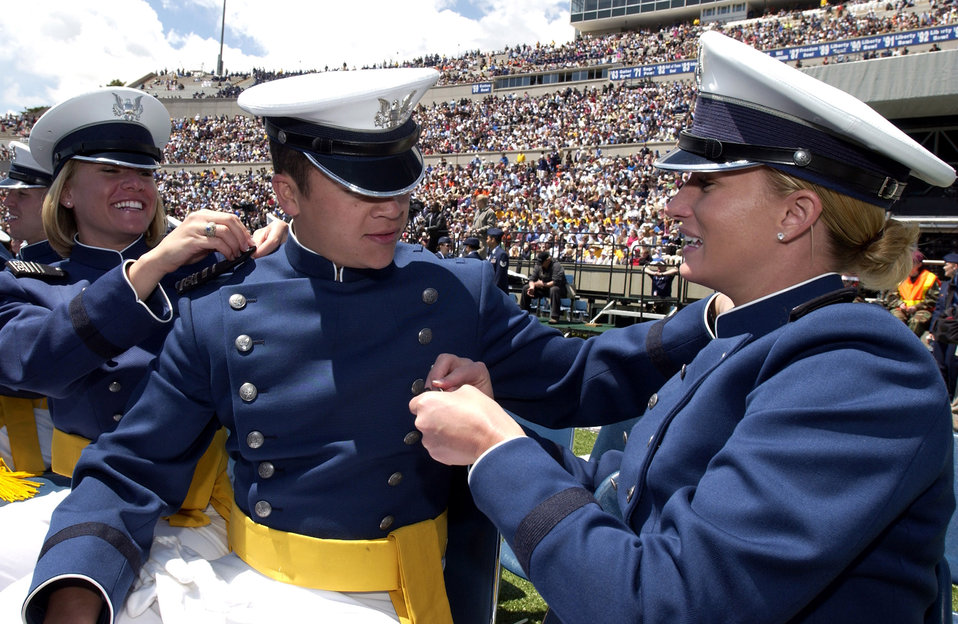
'Stay true' SECDEF tells Air Force Academy grads

Newly minted 2nd Lieutenants Catlin Butterfield, David Drennan and Kandi Hendershied pin second lieutenant bars on each other during the 2007 U.S. Air Force Academy graduation ceremony May 30 in Colorado Springs, Colo.